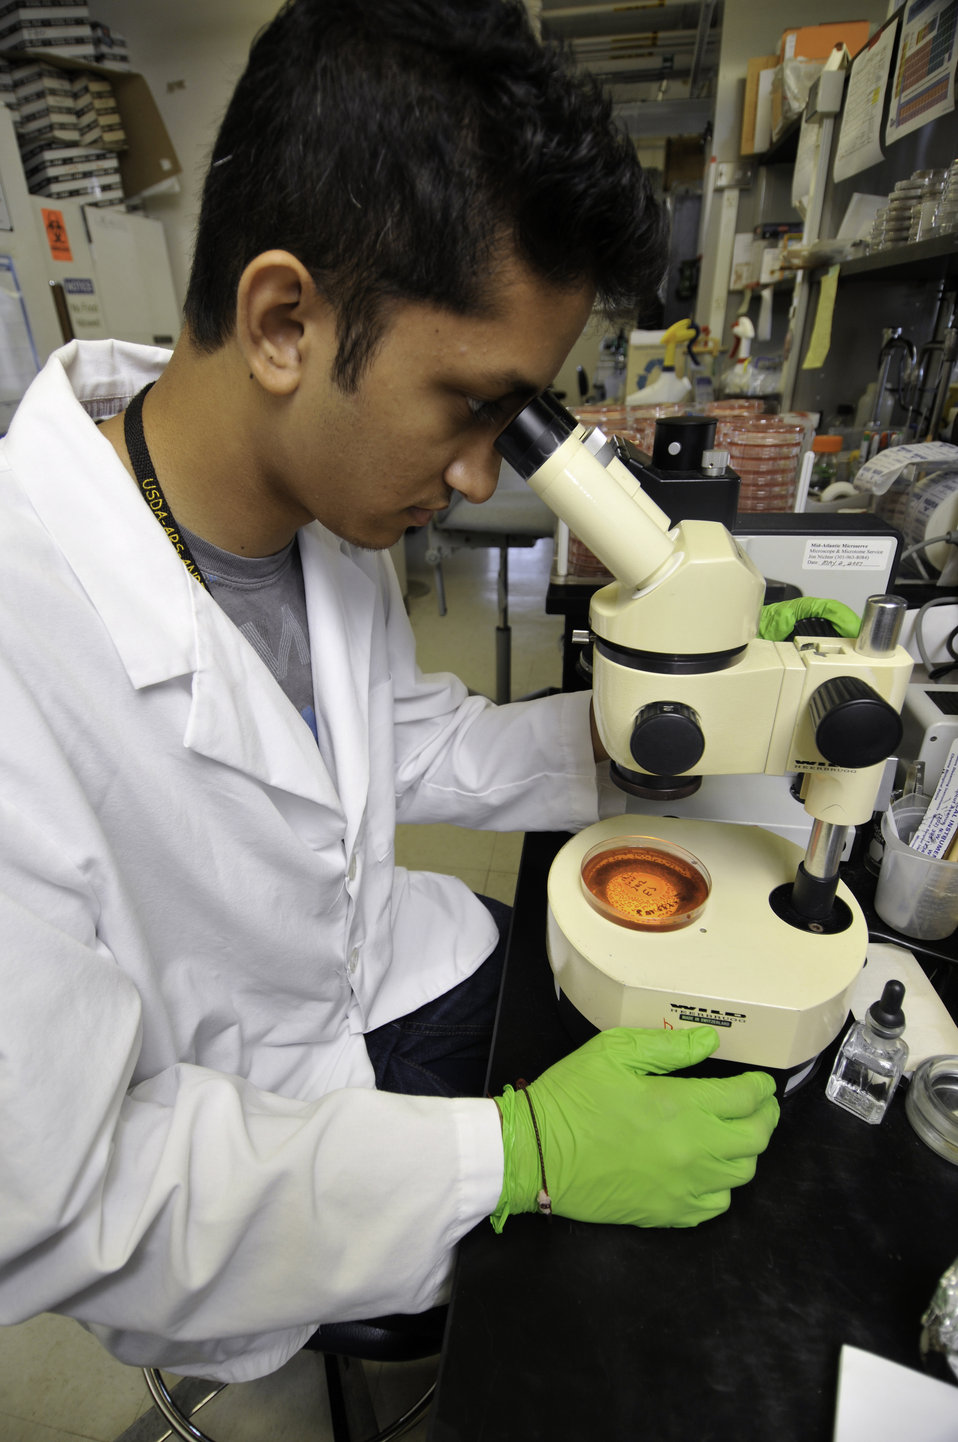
Intern and Freshman Neurology and Physiology major at the University of Maryland, College Park, Maryland Ankur Patel examines petri plates previously spiraled under magnification at the U.S. Department of Agriculture's (USDA) Agricultural Research Service (ARS), Environmental Microbial Food Safety Laboratory, and Beltsville Agricultural Research Center in Beltsville, Maryland on July 26, 2010.